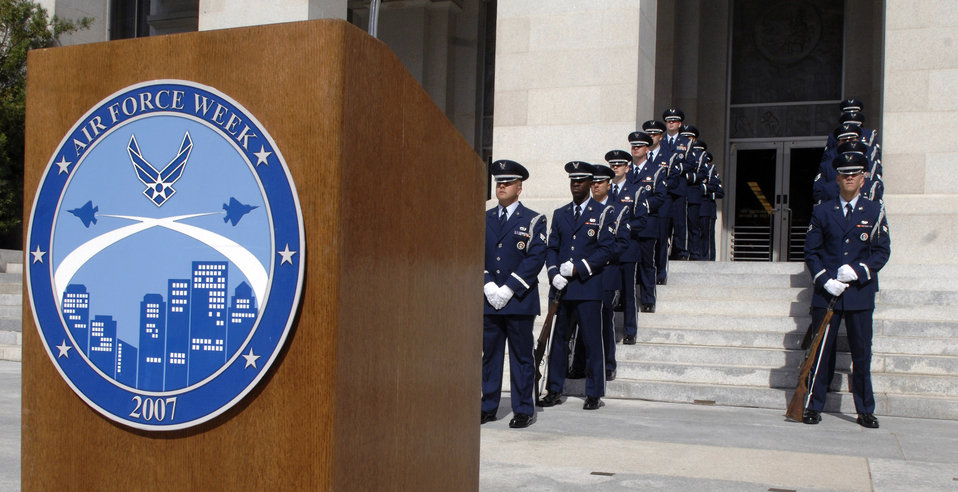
Air Force Week begins in Sacramento

Members from the Beale Air Force Base Honor Guard stand-ready moments before the Air Force Week California Proclamation Ceremony June 4 at Sacramento, Calif. The purpose of Air Force Week is to inform and educate the American public about the importance and roles of the Air Force in America's national defense.